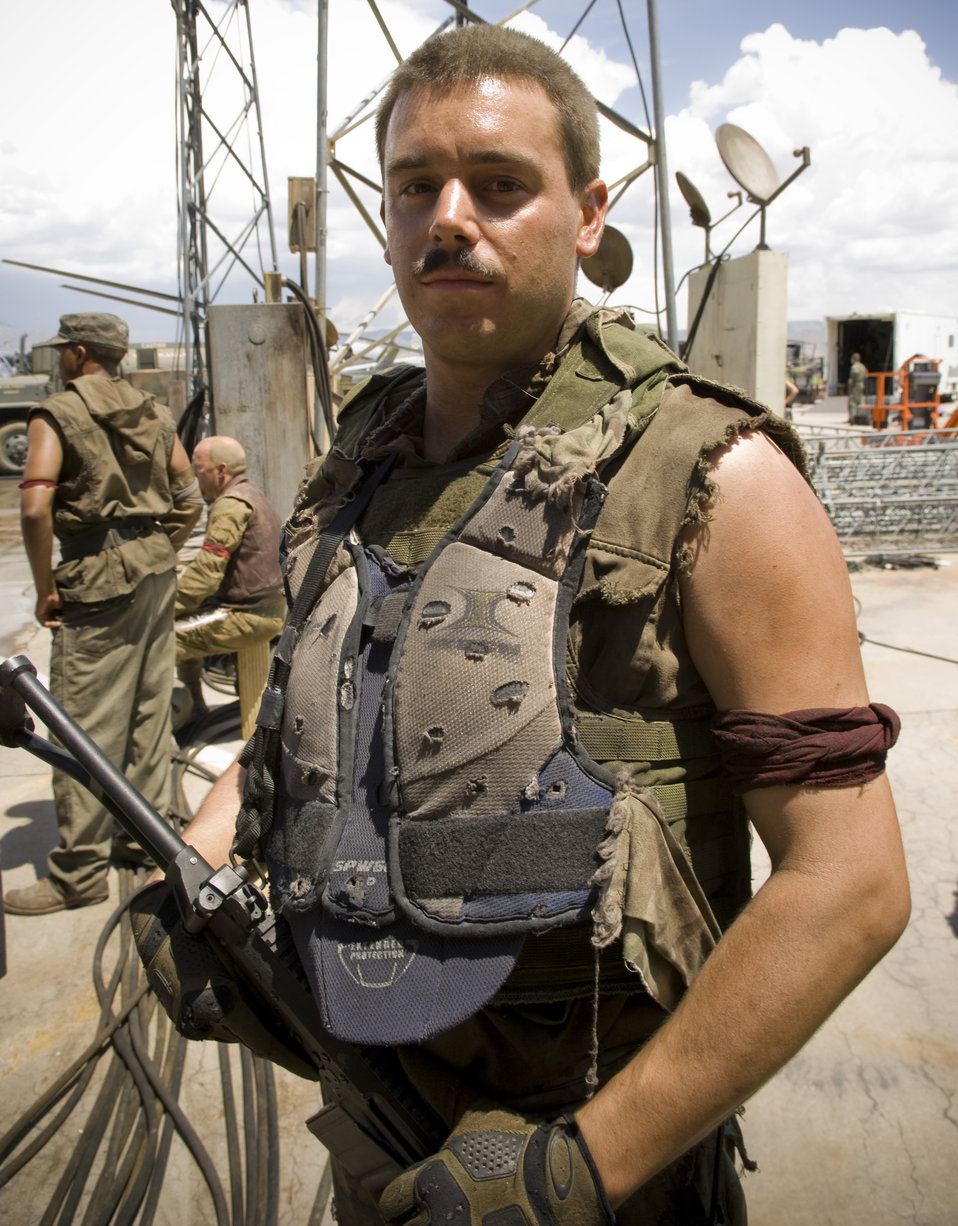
Airmen onboard Terminator Salvation

Senior Airman, Kenton Roberts portrayed a resistance fighter for the production of Terminator Salvation at Kirtland Air Force Base, NM on July 18, 2008. Airman Roberts is with the 377th Security Forces Squadron here.